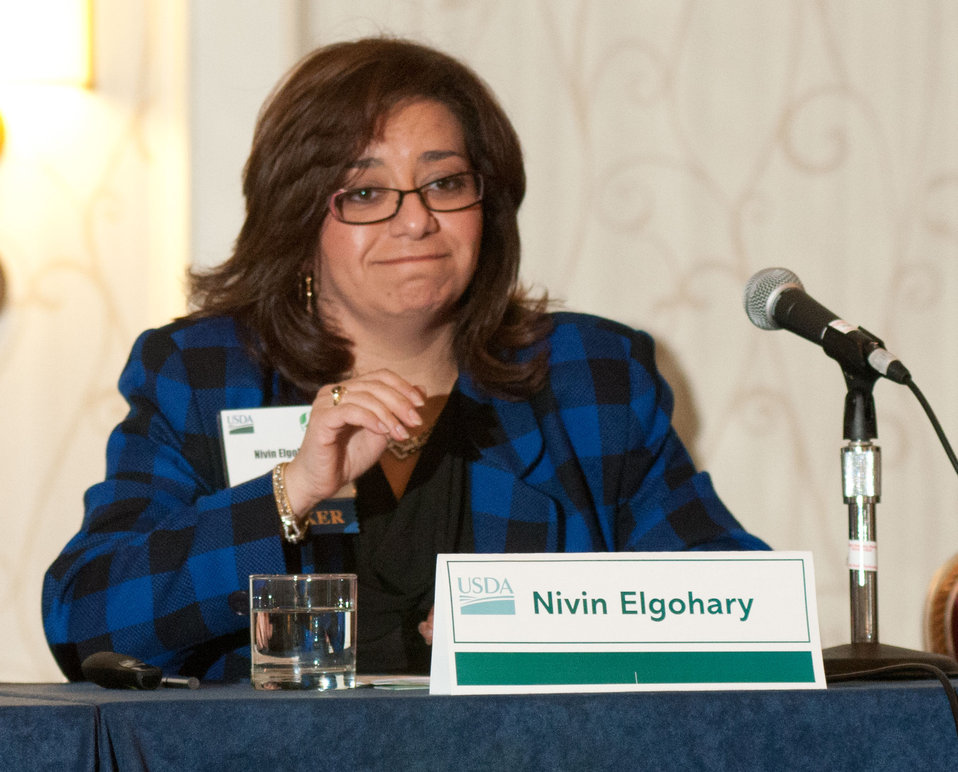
The U.S. Department of Agriculture (USDA) Rural Development (RD), Electric Program Rural Utilities Service Assistant Administrator Nivin Elgohary, right, speaks on the topic; How New Energy Investment Benefits Rural Communities, during the Energizing Rural Economies breakout session at the 2013 Agricultural Outlook Forum held at the Crystal Gateway Marriott Hotel in Arlington, VA on Friday, Feb. 22, 2013. The panel discussed the expanding capital available for rural investments that helps deliver the tools and technologies to meet energy, telecommunications, and business needs to help the rural economy to grow. Rural Development programs and services can help rural consumers increase productivity, efficiency, and innovation, which can expand domestic an foreign markets, reduce costs, and help diversify and strengthen rural economies.